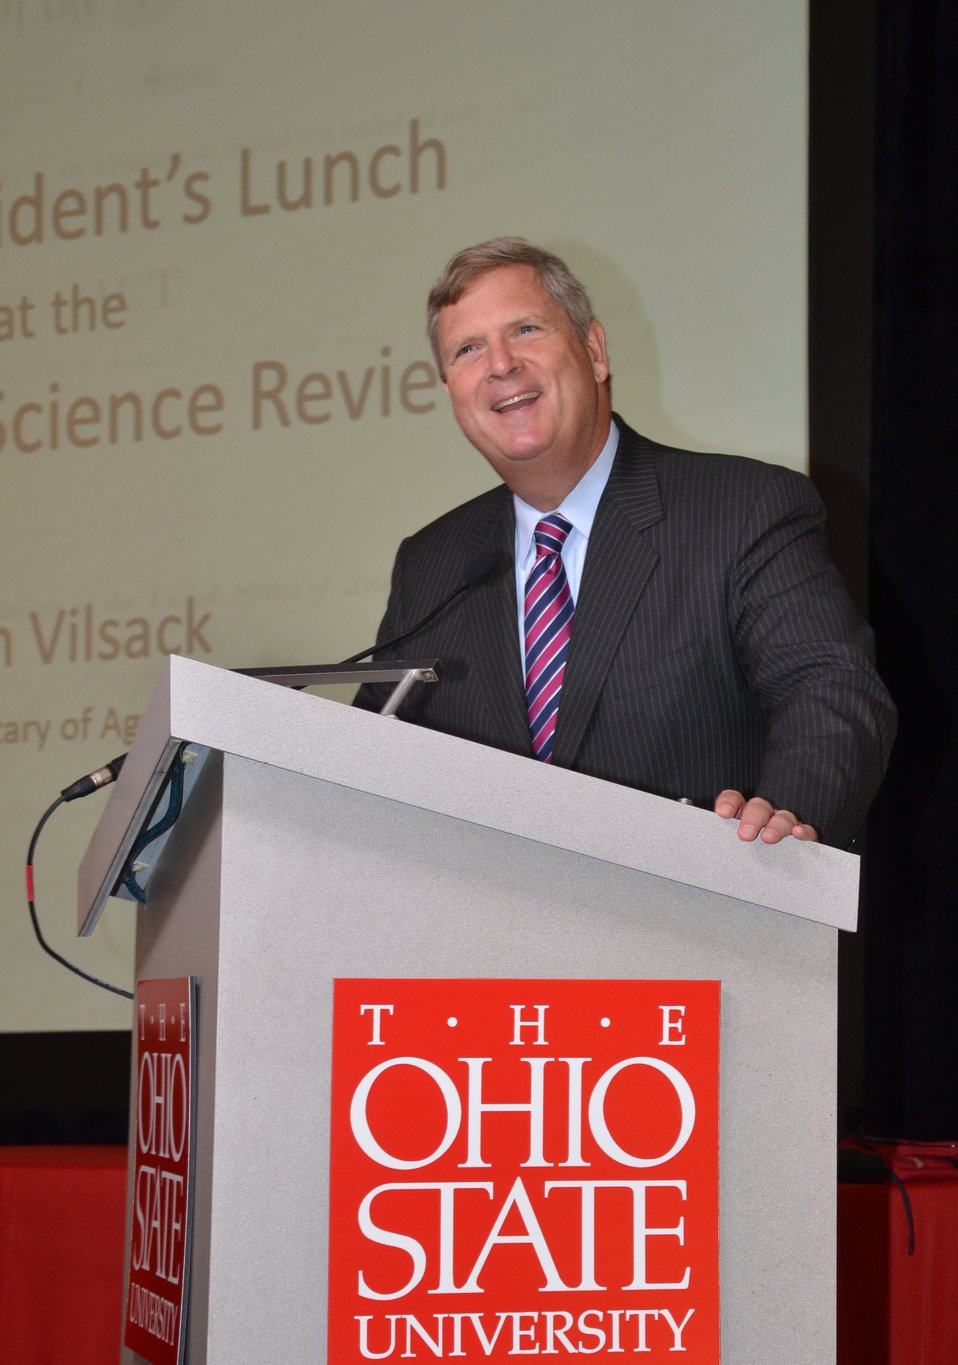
Agriculture Secretary Tom Vilsack speaking during the Vice President's Luncheon at the Farm Science Review, at Ohio State University in London, OH., on Tuesday, September 18, 2012.